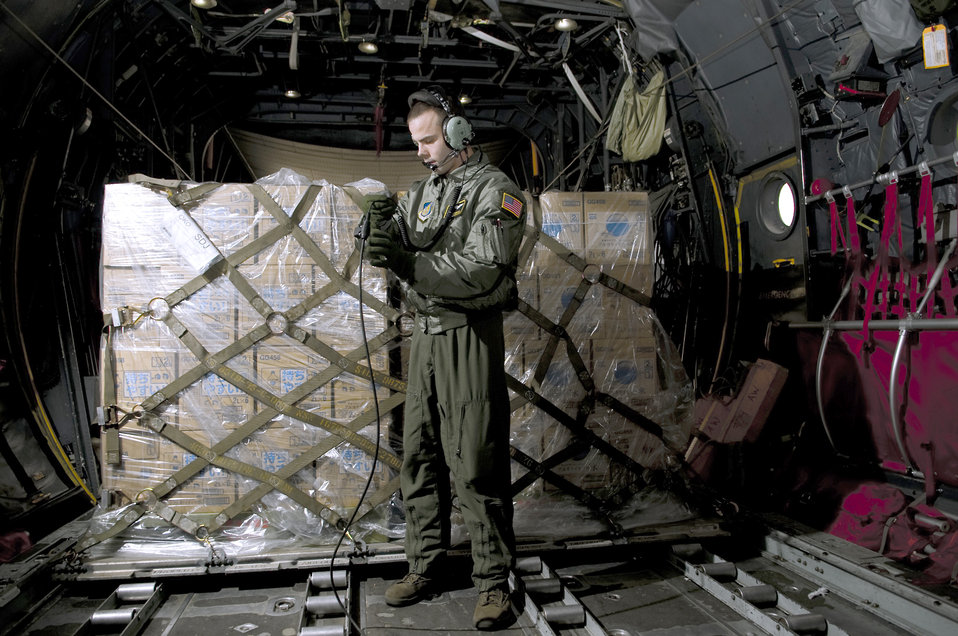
Operation Tomodachi

Senior Airman Brandon Lee talks with the rest of the crew before unloading a pallet of water March 26, 2011, at Sendai Airport, Japan. The water that was airlifted to Sendai Airport is part of the more than 1.5 million pounds of water being moved from Yokota Air Base, Japan, to Northern Japan, in support of Operation Tomodachi. Lee is assigned to the 36th Airlift Squadron.